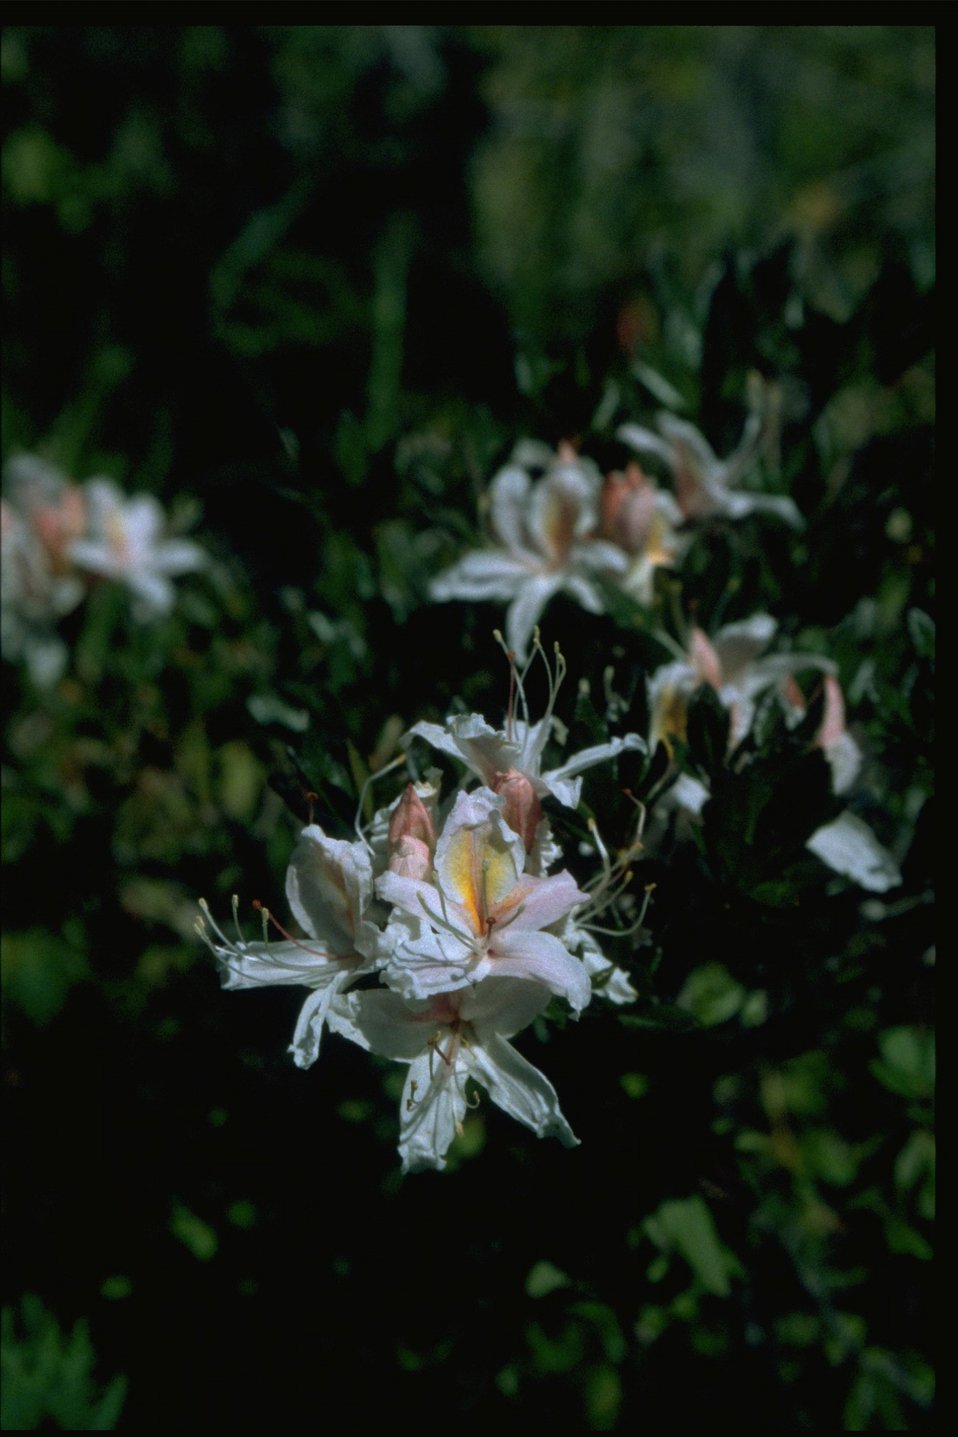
Closeup shot of Rhododendron occidentale.